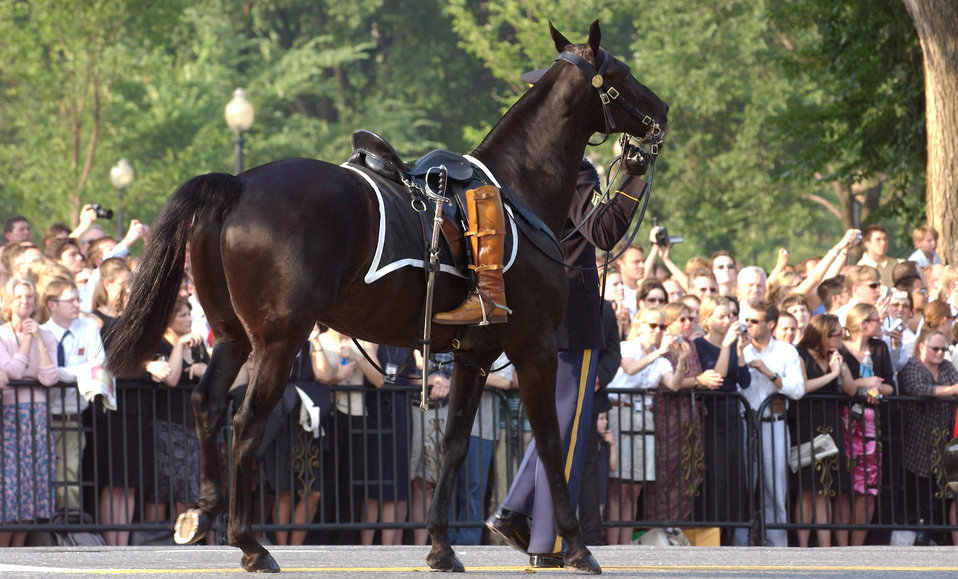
A solemn journey

WASHINGTON (AFPN) -- A riderless horse follows the caisson bearing former President Ronald Reagan's flag-draped casket during his funeral procession here June 9. A pair of President Reagan's boots are reversed in the stirrups of the empty saddle symbolizing that he will never ride again. He served as the military's commander-in-chief from 1981 to 1989.